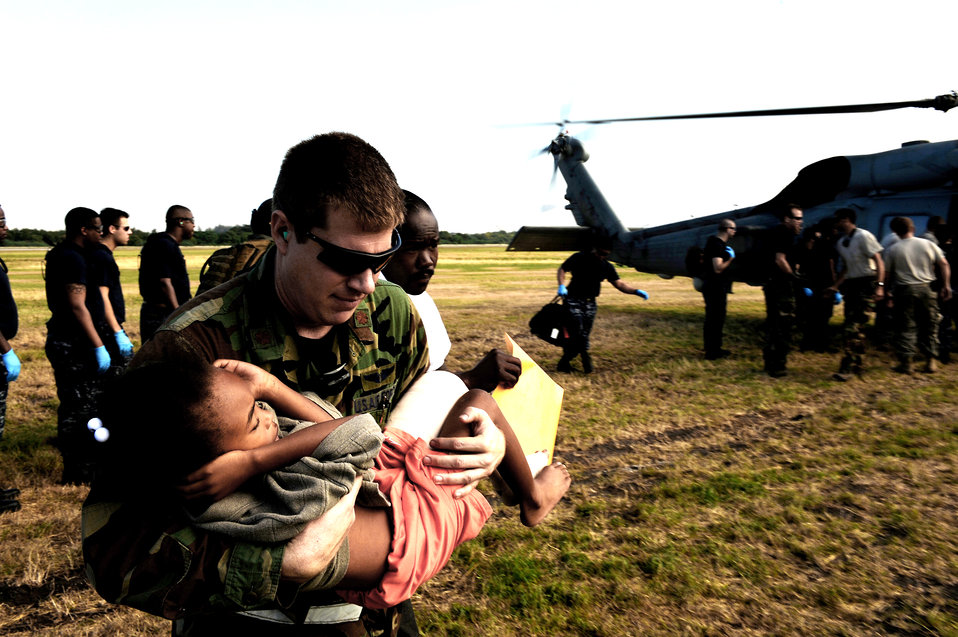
It will be better soon

Maj. Timothy Ballard carries a 6- year-old boy from a helicopter to a field clinic Jan 19, 2010, at the Toussaint L'Ouverture International Airport in Port-au-Prince, Haiti. Later, the boy was air lifted to a stateside hospital in southern Florida. Major Ballard is with the 1st Special Operations Support Squadron at Hurlburt Field, Fla.